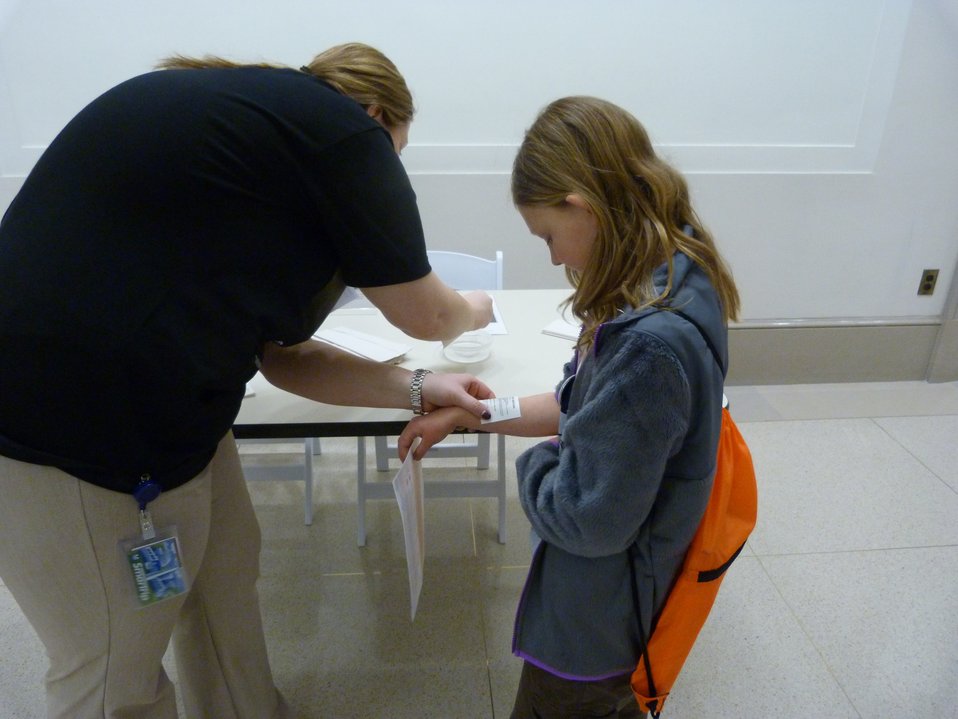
Rotunda Sleepover; Photo provided by The Foundation for the National Archives